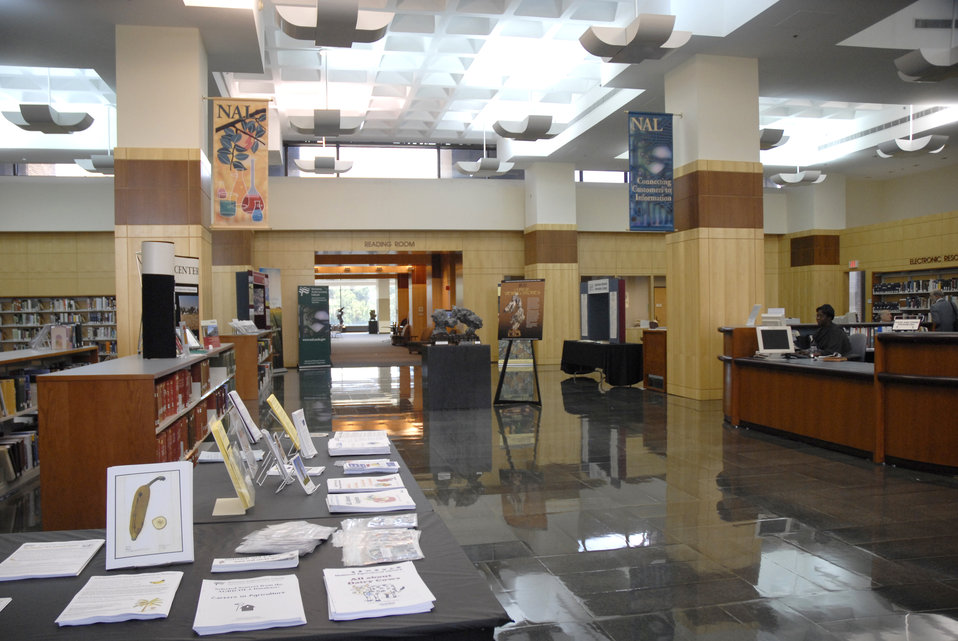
This the main lobby of the U.S. National Agricultural Library (NAL) in Beltsville, MD on August 22, 2008. NAL is one of the world's largest agricultural research libraries, and serves as a national library of the U.S. and as the library of the U.S. Department of Agriculture (USDA). The library is one of four national libraries of the U.S. (along with the Library of Congress, the National Library of Medicine, and the National Library of Education). It is also the coordinator for the Agriculture Network Information Center, a national network of state land-grant institutions and coordinator for USDA field libraries. NAL was established on May 15, 1862, by the signing of the Organic Act by Abraham Lincoln. It served as a departmental library until 1962, when the Secretary of Agriculture officially designated it as the National Agricultural Library. USDA photo Alice Welch.